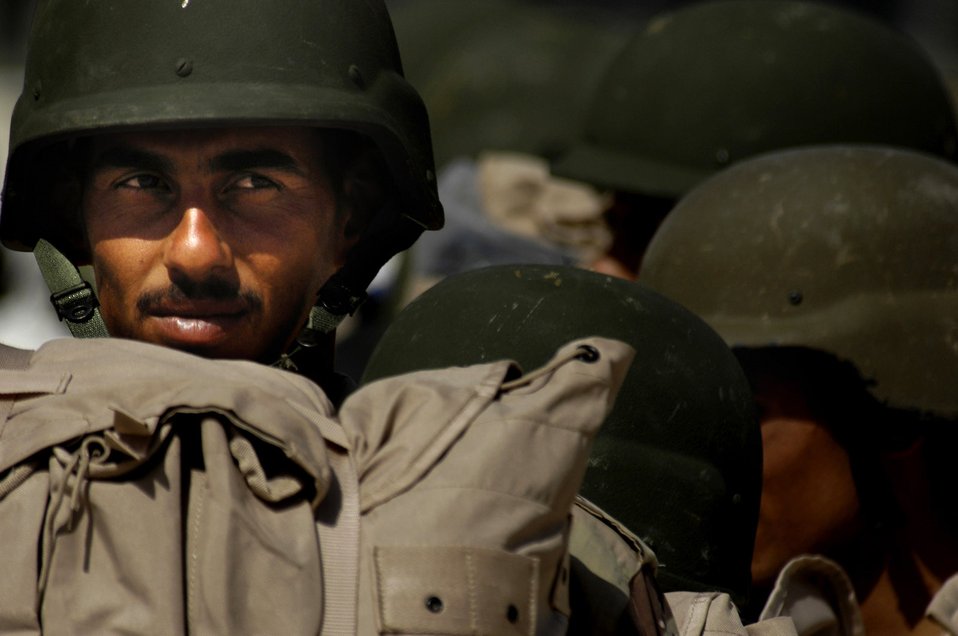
Iraqi air force in the fight

A member of the Iraqi army boards an Iraqi C-130 Hercules for a March 30 flight to Basra, Iraq, at New Al Muthana Air Base, Iraq. All processing, loading and transporting of the Iraqi troops is being conducted by the Iraqi air force.